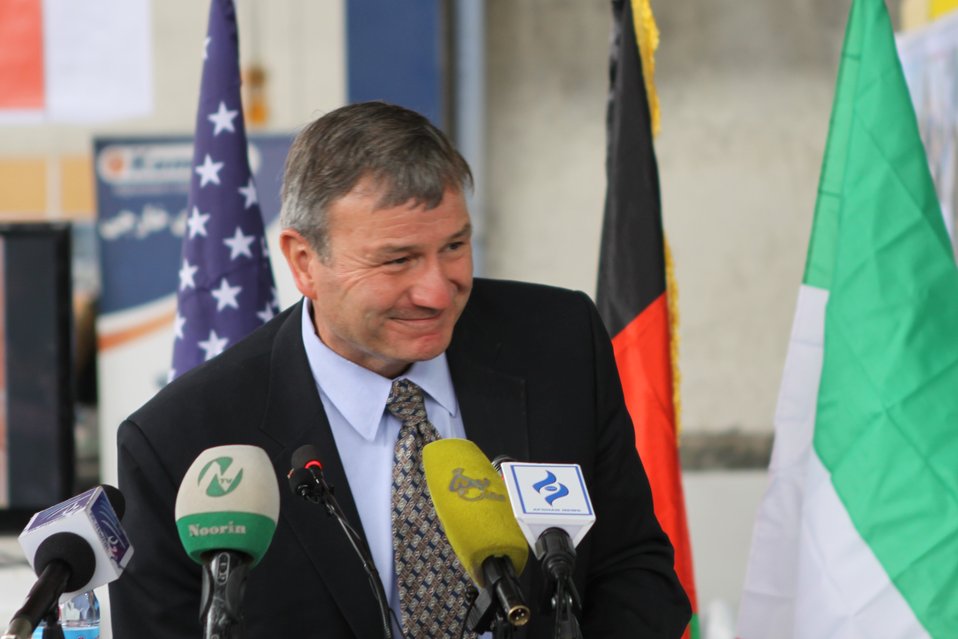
100525 Hirat Marble Conference 236